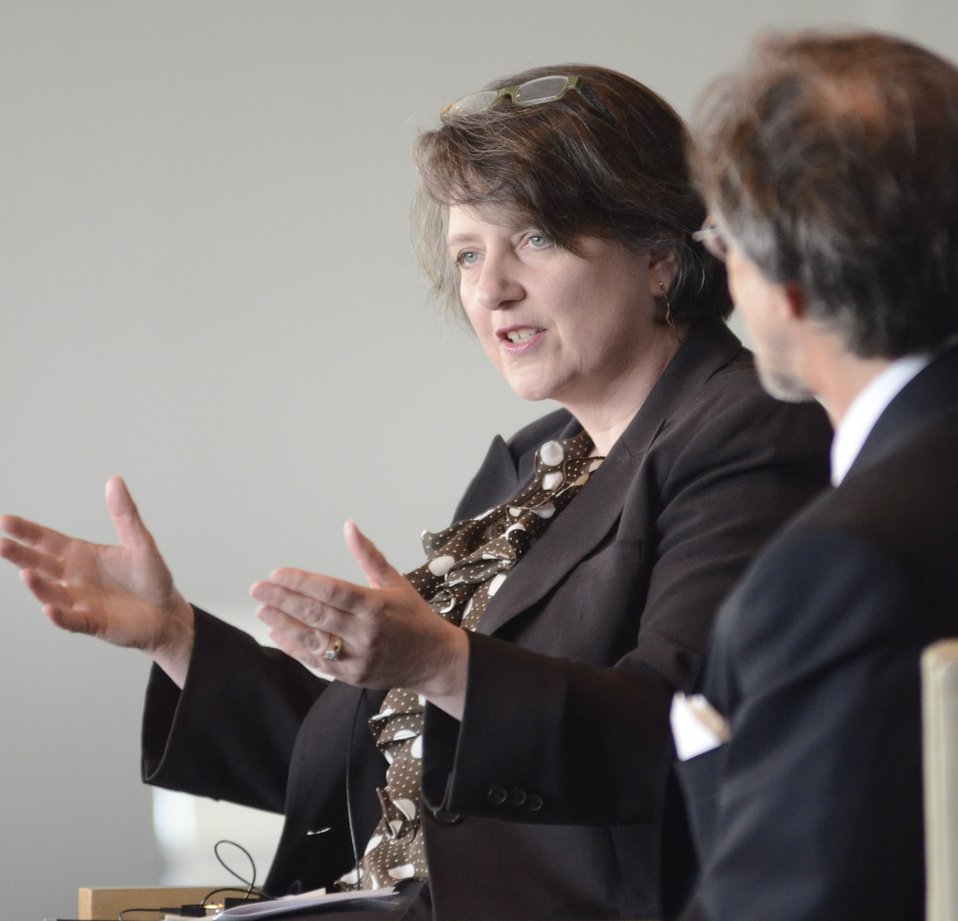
The Atlantic Senior Editor Corby Kummer interviews Agriculture Deputy Secretary Kathleen Merrigan at the 3rd Annual Food Summit held at the W Hotel in Washington, D.C. on Thursday, May 24, 2012. The Food Summit event includes interviews, panel discussions and symposia with leading authorities on issues related to food, food security, and nutrition.